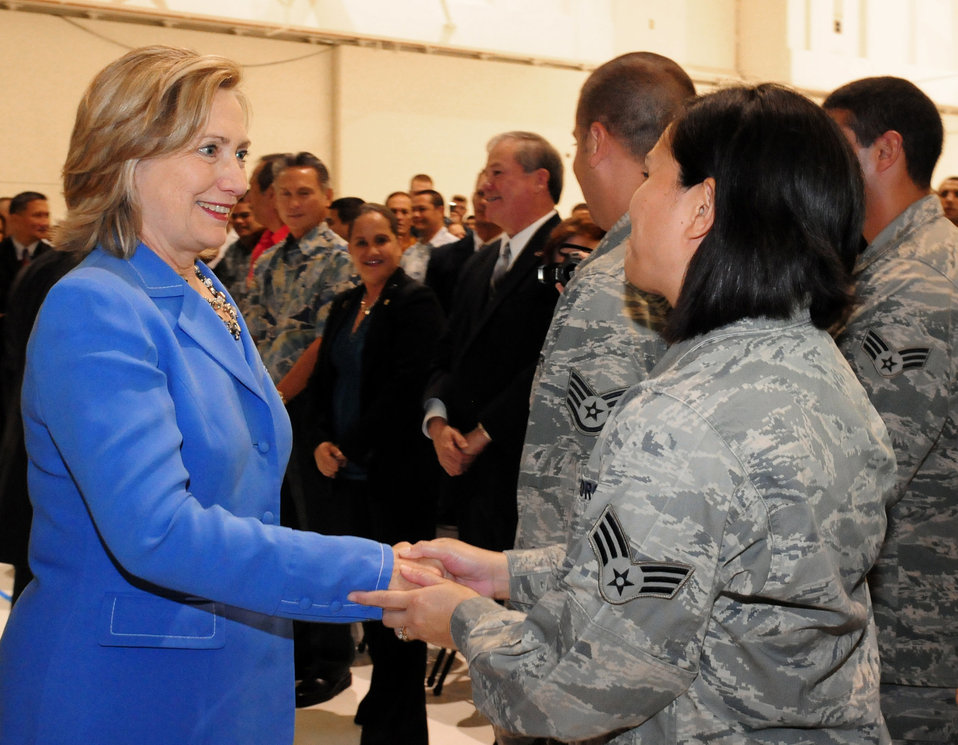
Secretary of State delivers message of praise to Andersen servicemembers

Secretary of State Hillary Clinton shakes hands with servicemembers Oct. 29, 2010, at Andersen Air Force Base, Guam. Secretary Clinton visited the base as part of her trip to the Asia-Pacific region.